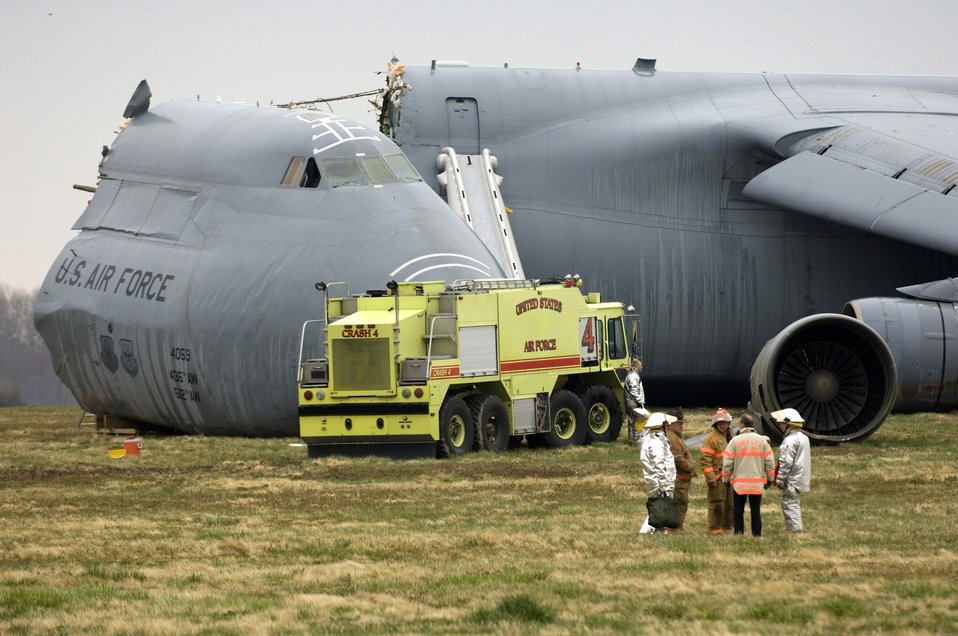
C-5 Galaxy crashes at Dover AFB

Emergency responders are on the scene of a C-5 Galaxy crash today, April 3, 2006 at Dover Air Force Base, Del.